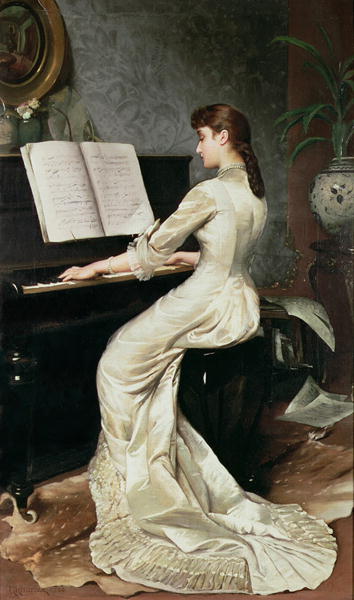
Barrable, George Hamilton - A Song Without Words - 1888